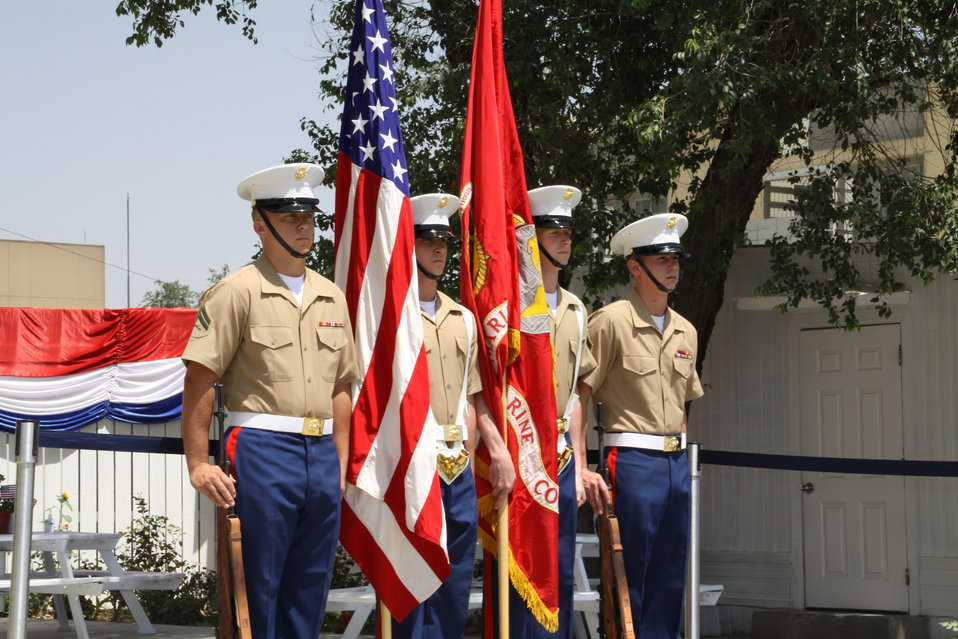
Kabul Official July 4th Celebration